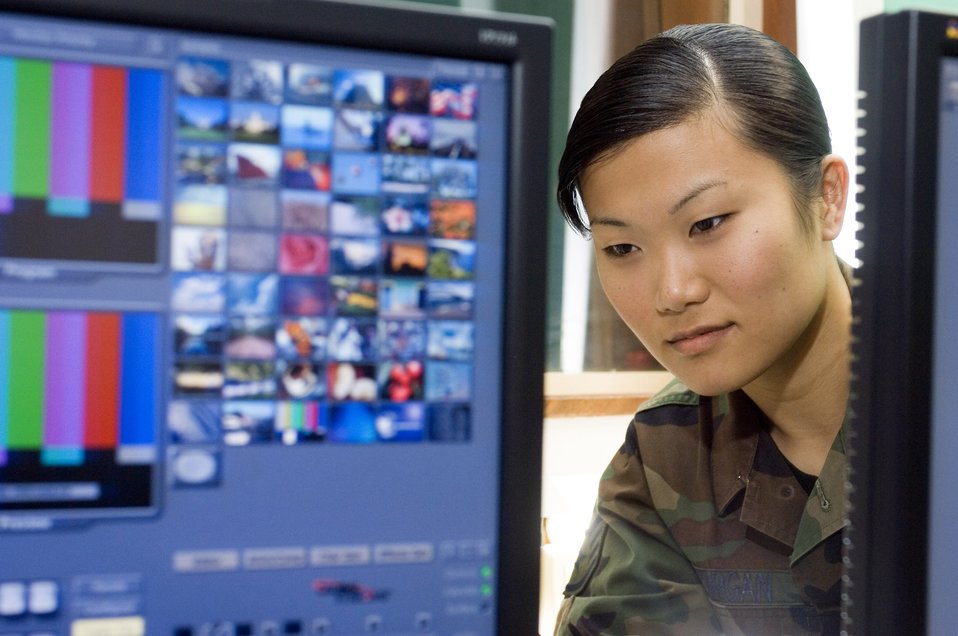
Visual imagery and electronic intrusion specialist

Staff Sgt. Leah Morgan maintains video imaging equipment at Ramstein Air Base, Germany, on Tuesday, April 18, 2006. Sergeant Morgan was born in South Korea and is now a visual imagery and electronic intrusion specialist with Air Force News repairing and maintaining radio and television broadcast equipment.